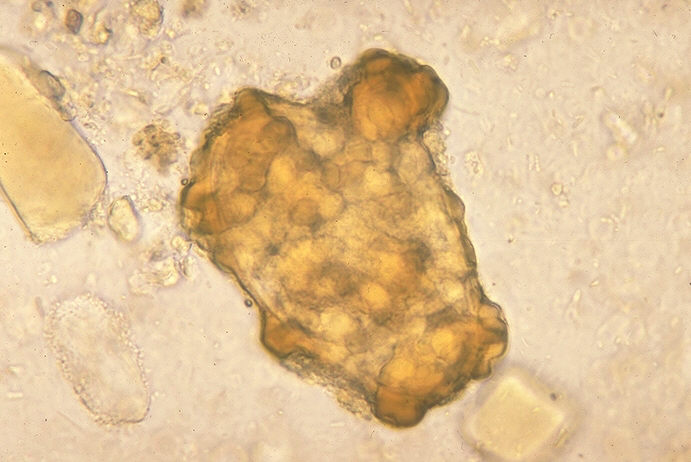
Infertile egg of Ascaris lumbricoides.